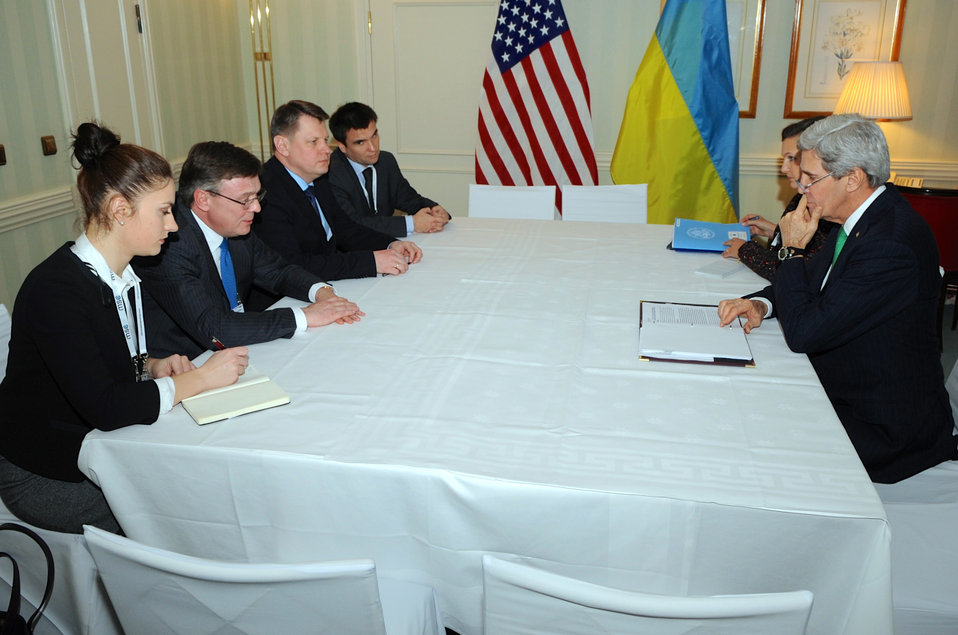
Secretary Kerry Meets With Ukranian Foreign Minister Kozhara at Munich Security Conference

U.S. Secretary of State John Kerry and Assistant Secretary for European and Eurasian Affairs Victoria Nuland meet with Ukrainian Foreign Minister Leonid Kozhara on the margins of the Munich Security Conference in Munich, Germany, on February 1, 2014.